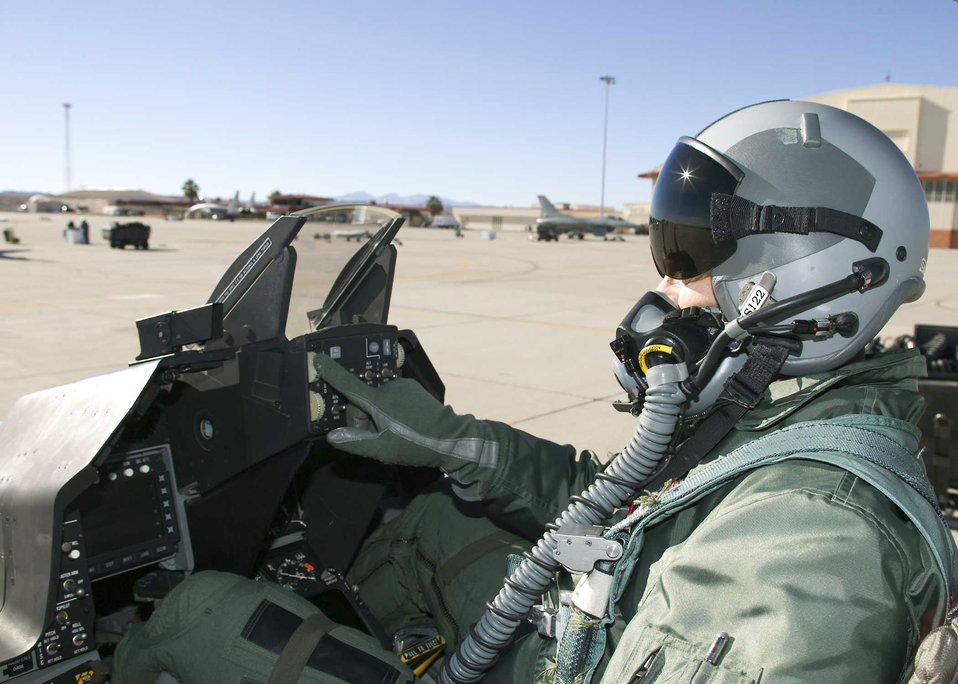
pilot

EDWARDS AIR FORCE BASE, Calif. (AFPN) -- Rainey Steven is one of six civilian test pilots recently brought on board via an Air Force Materiel Command initiative to bring more experience to the test world while putting more pilots in operational aircraft. Mr. Steven works for the 412th Test Wing here.